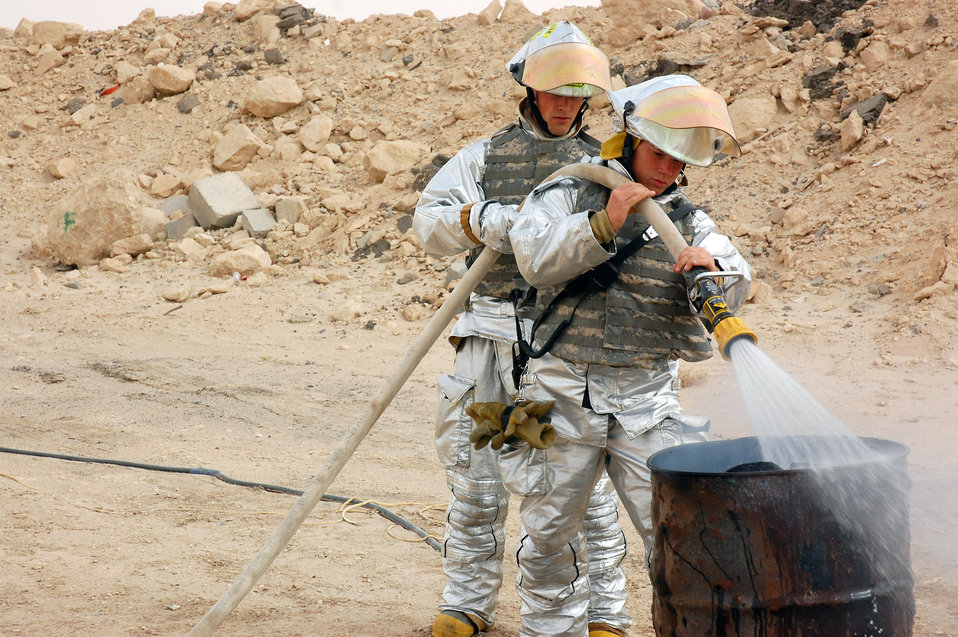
Responders ready for real deal

Senior Airman Jeffrey Sawmiller (front) and Senior Airman Corey Kostroski put out a fire during a battle drill April 9 at a Southwest Asian air base. Base members continually test the combat readiness and response capabilities of the Airmen in the wing. Airmen Sawmiller and Kostroski are 386th Expeditionary Civil Engineer Squadron firefighters.